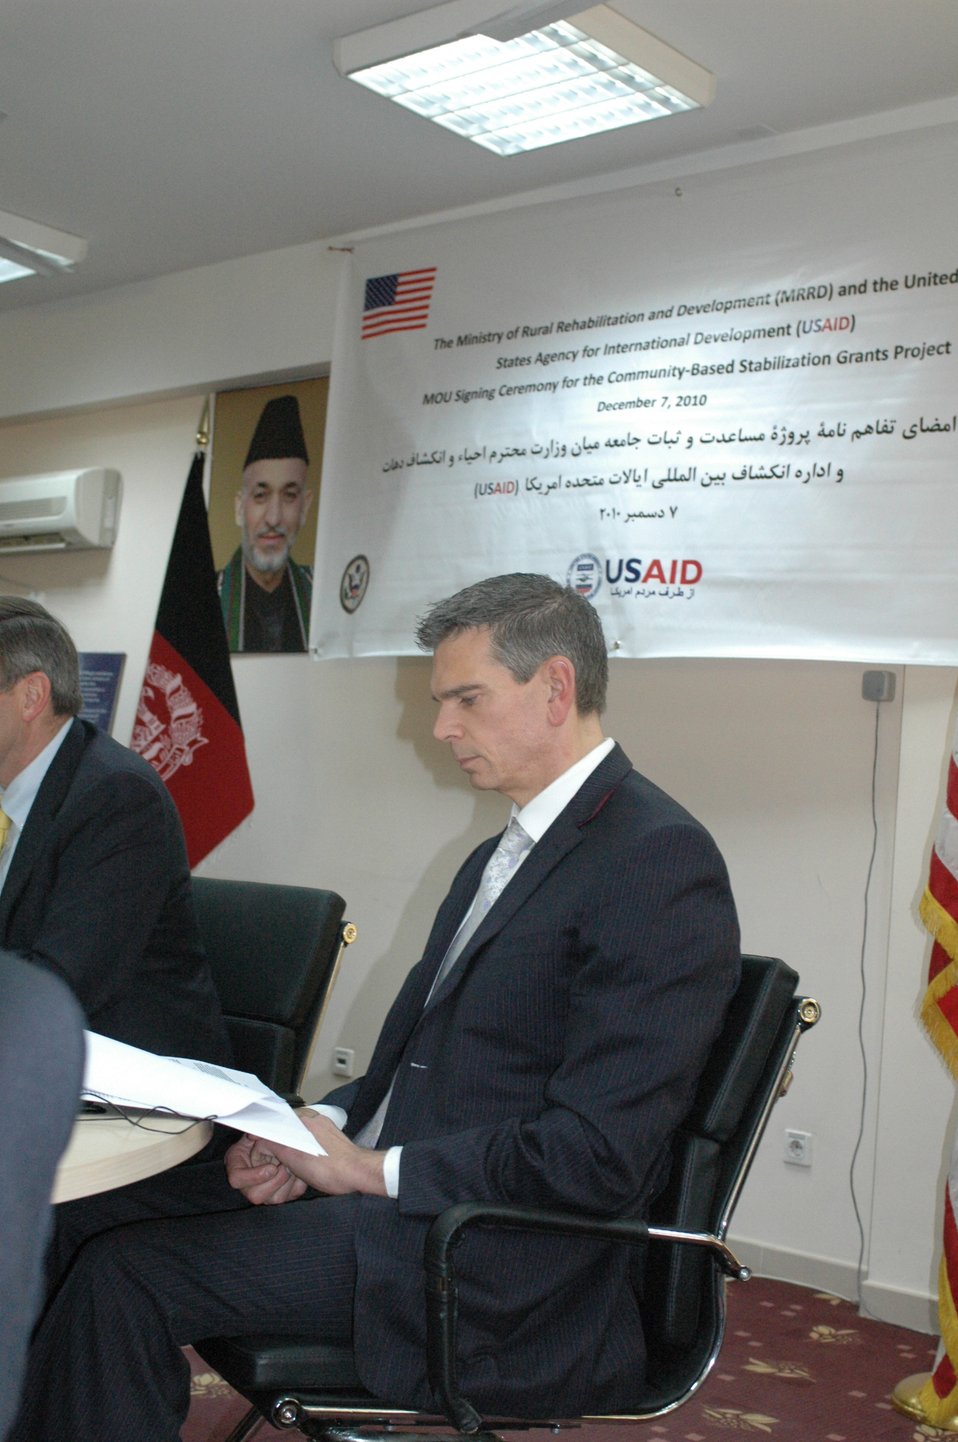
Community Based Stabilization Grants Ceremony, December 7, 2010